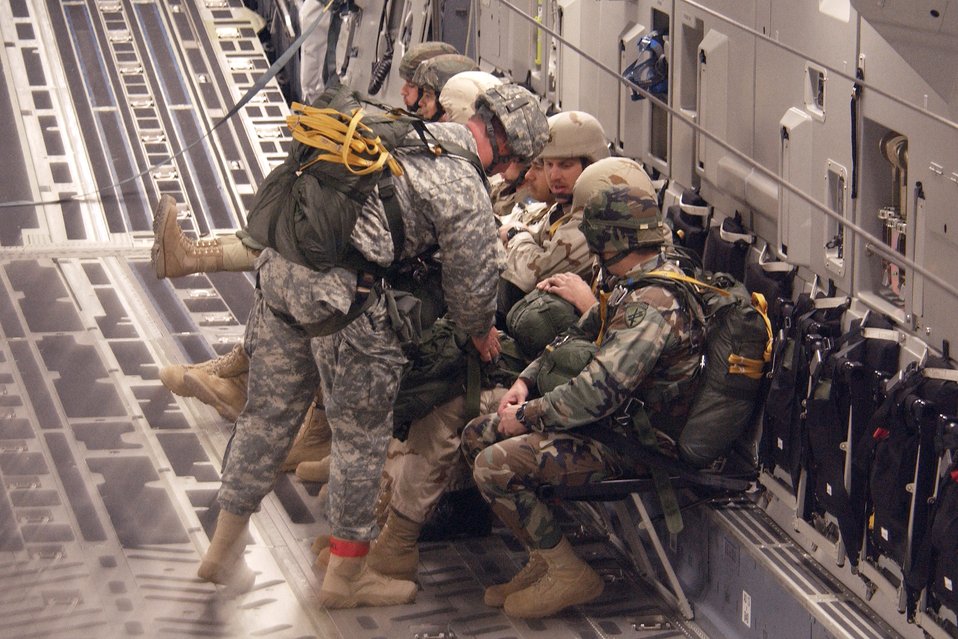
Mission Employment Exercise 06

Members of the 820th Red Horse Squadron prepare jump gear with along with Army Airborne members before a landing zone exercise during the Weapon School's Mission Employment Phase Dec. 8 at Nellis Air Force Base, Nev. Mission employment is the final phase of a five-month course prior to weapons school graduation. Nearly 80 aircraft from both the Air Force and Navy will participate in the nearly two-week event.